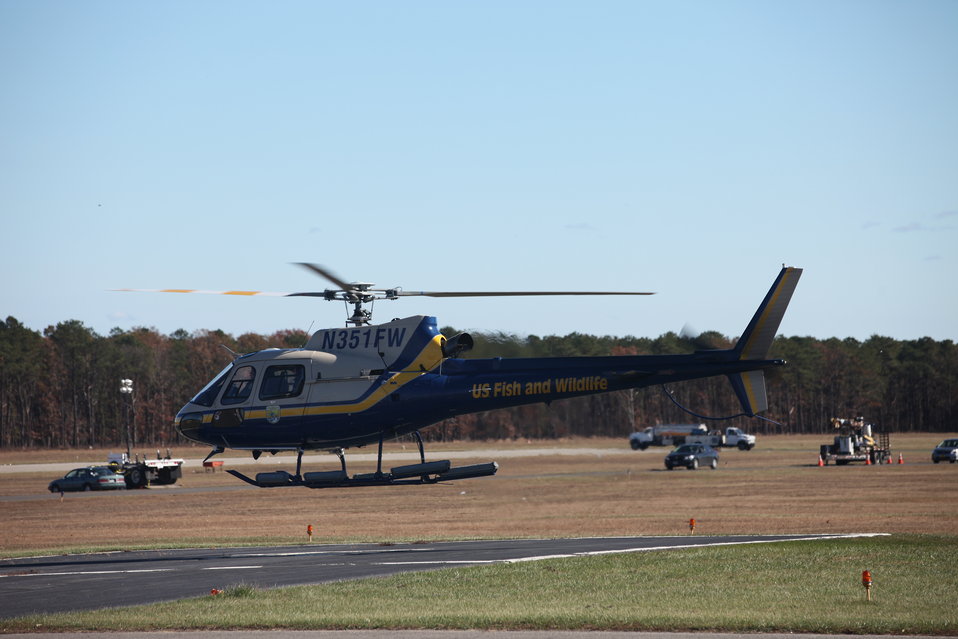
U.S. Fish and Wildlife Service helicopter touches down

The USFWS helicopter touches down in Long Island after taking managers and biologists from the Long Island National Wildlife Refuges on an aerial survey of storm damage in the aftermath of storm Sandy.